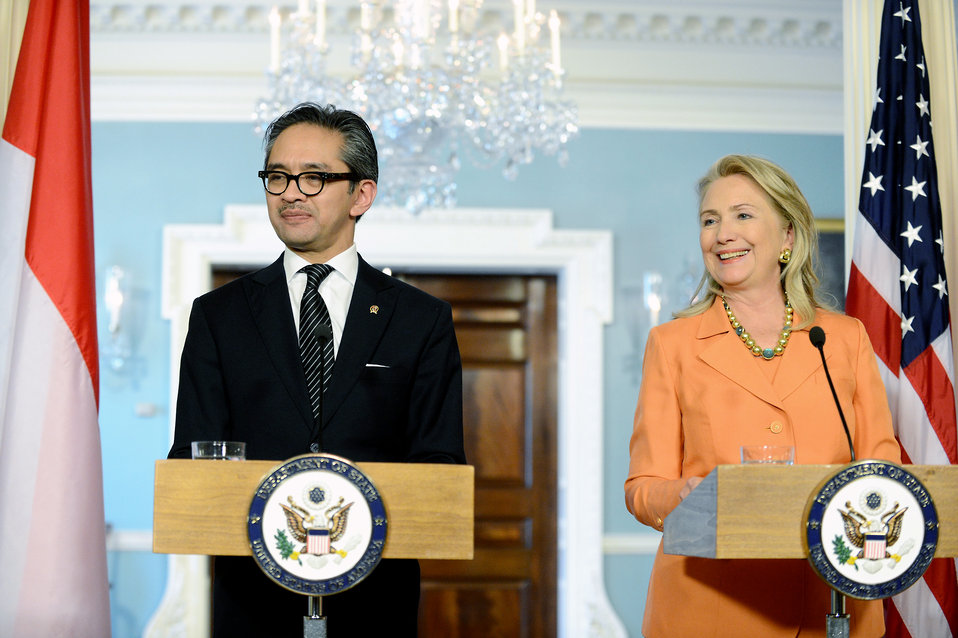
Secretary Clinton and Indonesian Foreign Minister R.M. Marty Natalegawa Address Reporters

U.S. Secretary of State Hillary Rodham Clinton hosts a joint press conference with Indonesian Foreign Minister R.M. Marty Natalegawa at the U.S. Department of State in Washington, D.C., September 20, 2012.